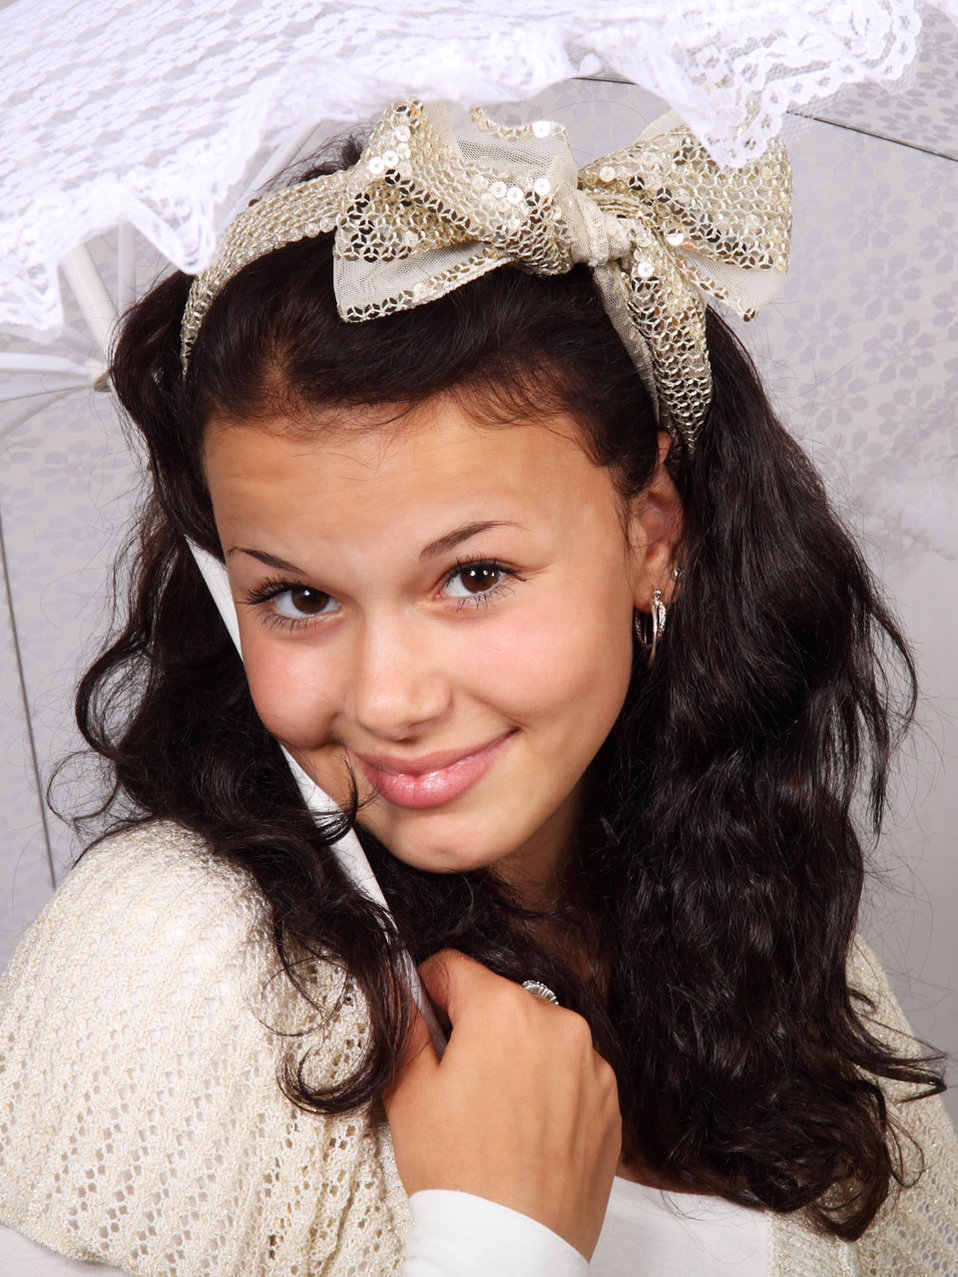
Shy woman

Shy girl smiling with umbrella.